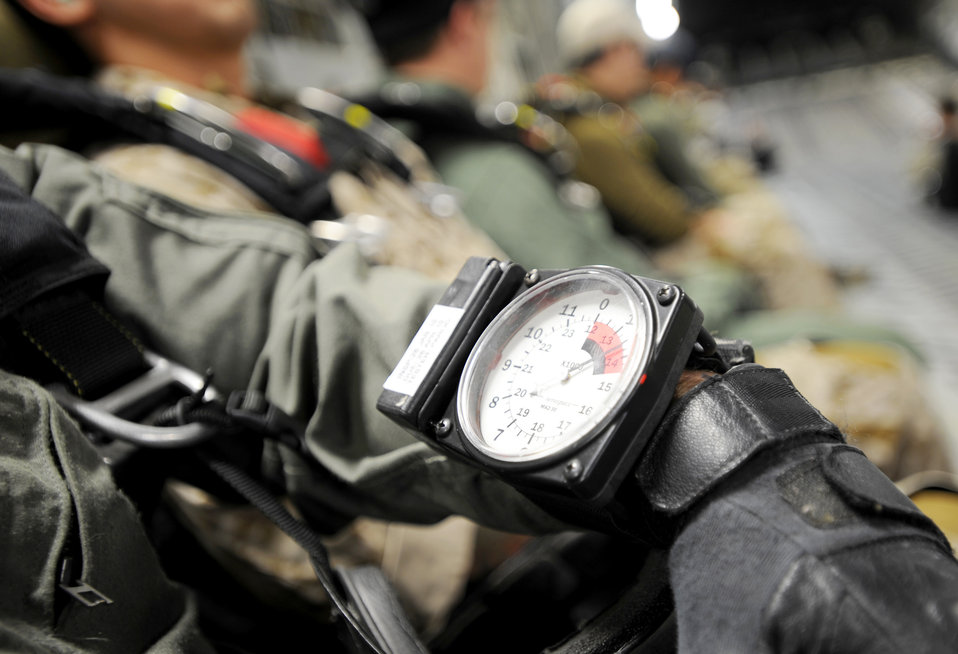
Joint training at 12,500 feet

A Navy SEAL checks his altimeter before jumping from a C-17 Globemaster III April 15, 2010, over Fort Picket Maneuver Training Center, Va. The jump was part of joint training exercise with 517th Airlift Squadron members from Elmendorf Air Force Base, Alaska.